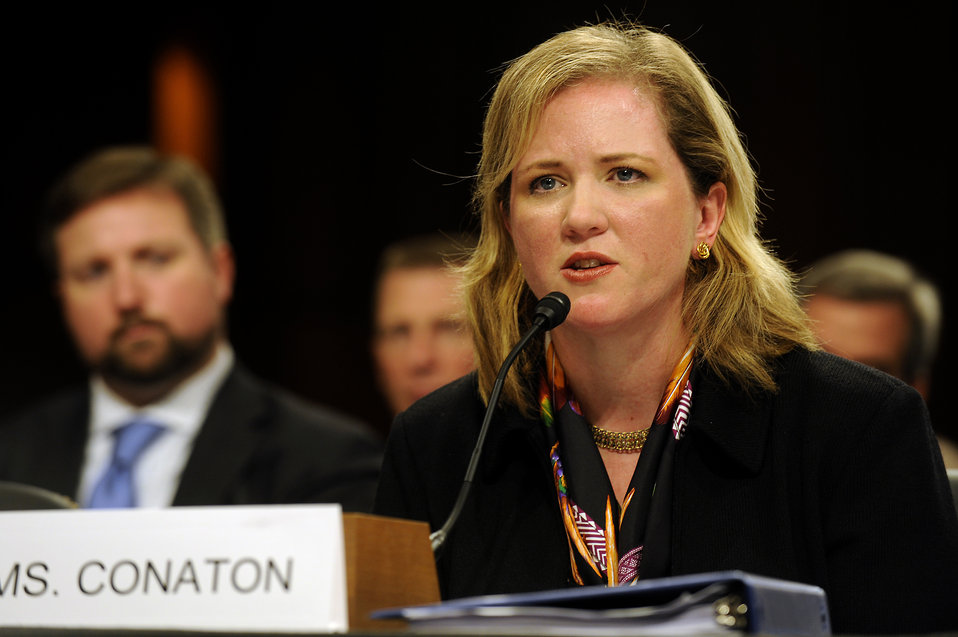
Air Force undersecretary nominee testifies

Erin Conaton, nominee for undersecretary of the Air Force, answers a question during a Senate Committee on Armed Services hearing Nov. 19, 2009, on Capitol Hill. Committee members told Ms. Conaton that they expect to see continued progress by the Air Force in acquisition, modernization and other Air Force issues.